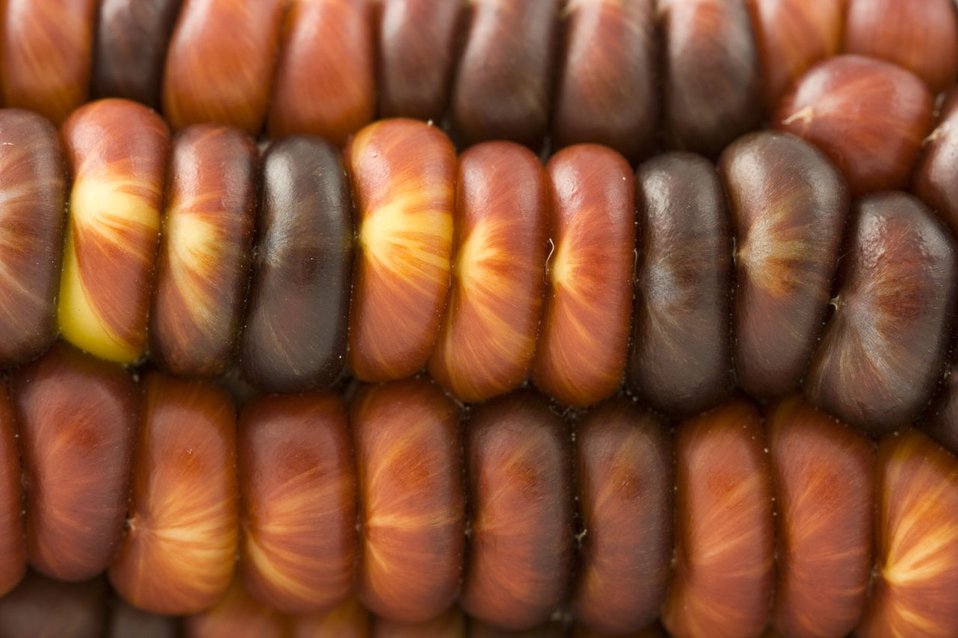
Red corn

Indian red corn for halloween.